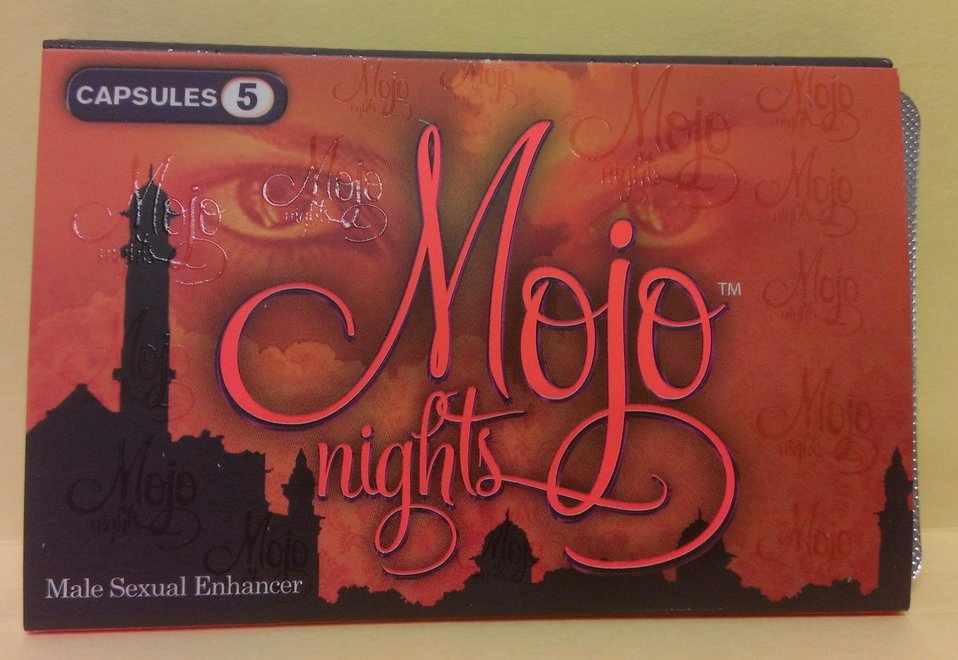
Mojo Nights

March 25, 2012 - The FDA is advising consumers not to purchase or use 'Mojo Nights,' a product promoted and sold for sexual enhancement. The product was found to contain undeclared tadalafil, sildenafil, sulfoaildenafil, sulfosildenafil, and hydroxythiohomosildenafil. For more information, go to www.fda.gov/Drugs/ResourcesForYou/Consumers/BuyingUsingMe...

And read this Consumer Update: Beware of Fraudulent ‘Dietary Supplements’